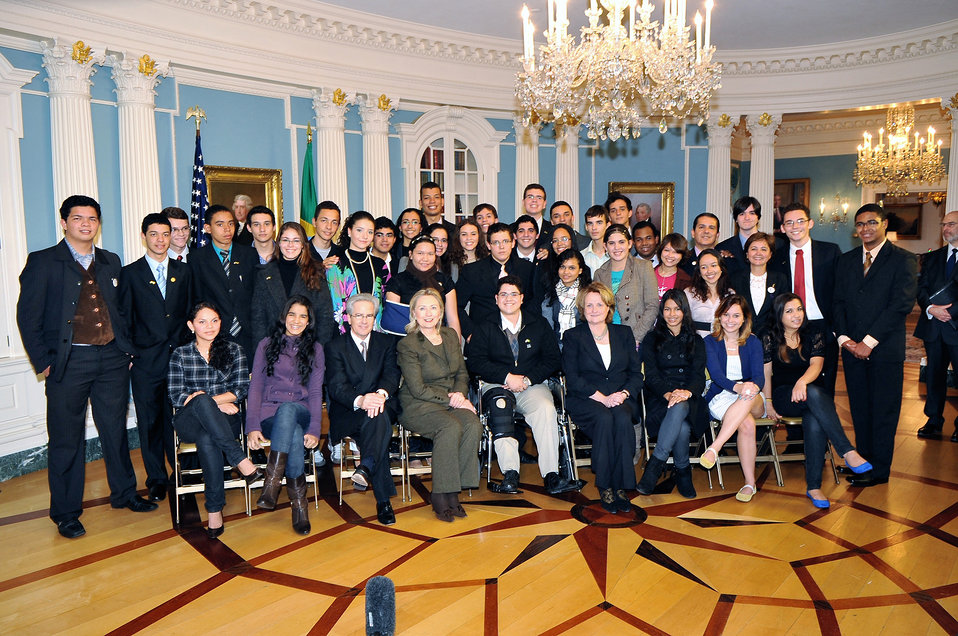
Secretary Clinton Poses for a Photo With Brazilian Youth Ambassadors

U.S. Secretary of State Hillary Rodham Clinton poses for a photo with Brazilian Youth Ambassadors in the Treaty Room at the U.S. Department of State in Washington, D.C., on January 27, 2011.